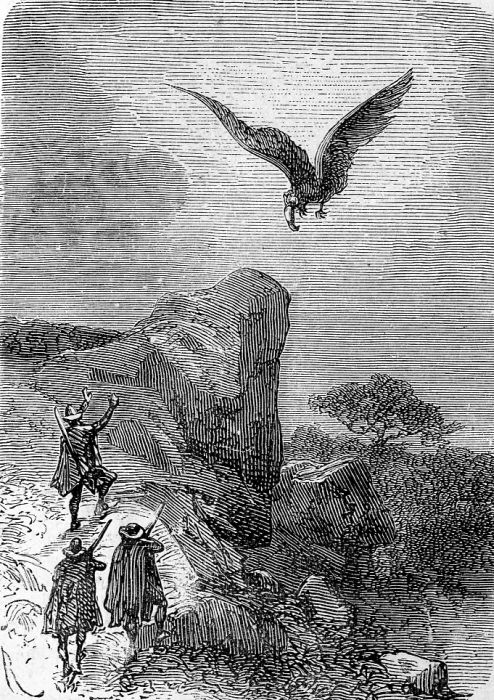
An ilustration from the novel 'In Search of the Castaways; or Captain Grant's Children' by Jules Verne drawn by Édouard Riou. Polski: Ilustracja powieści Juliusza Verne'a 'Dzieci kapitana Granta' autorstwa Édouarda Riou. Français : 'Les Enfants du capitaine Grant', Édouard Riou.